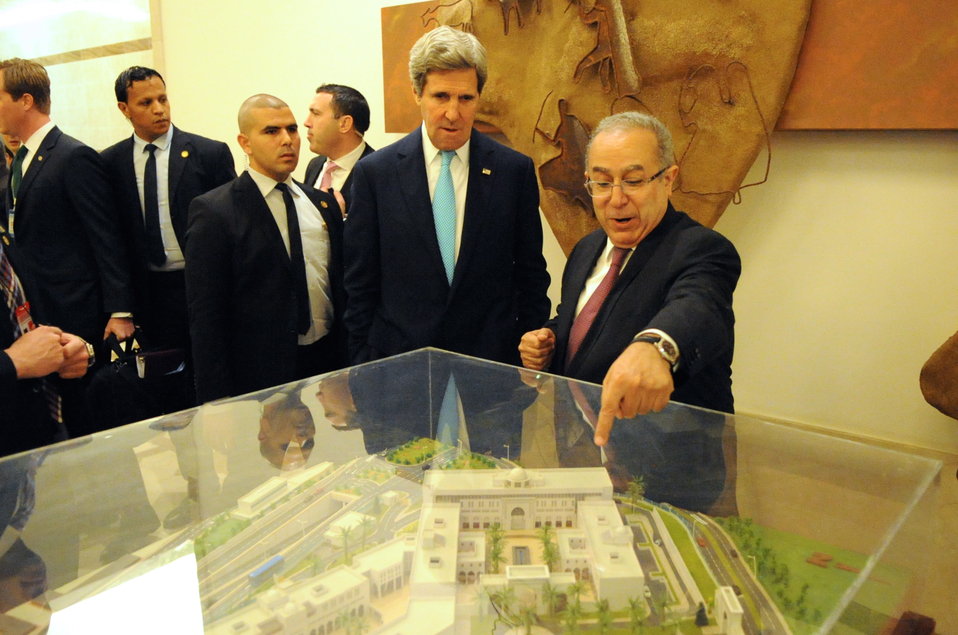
Algerian Foreign Minister Shows Secretary Kerry Ministry of Foreign Affairs Model in Algiers

Algerian Foreign Minister Ramtane Lamamra shows U.S. Secretary of State John Kerry a model of the Ministry of Foreign Affairs after a Strategic Dialogue between their two countries at the building in Algiers on April 3, 2014.